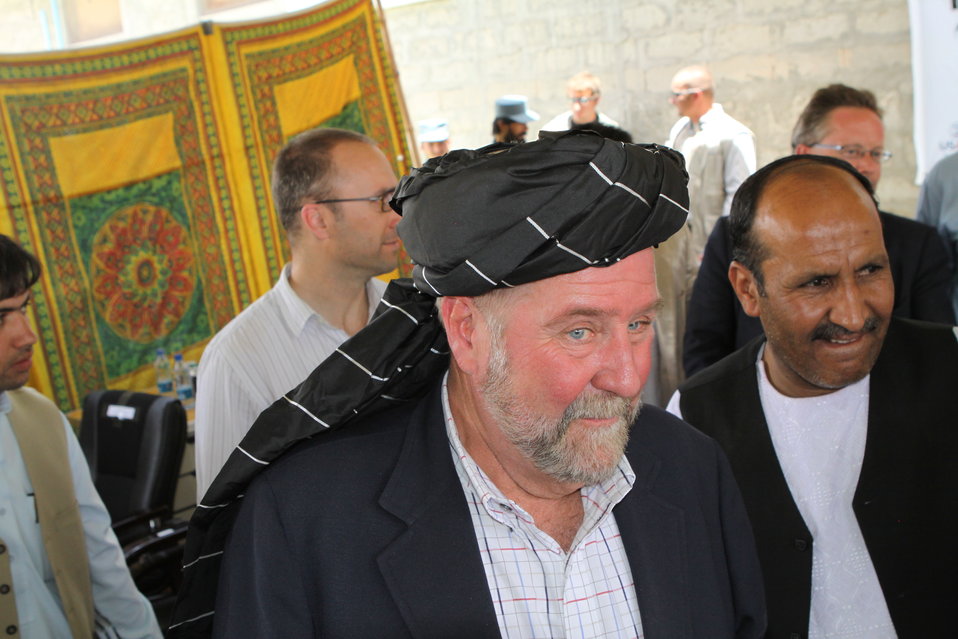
Bolan Poultry Farm